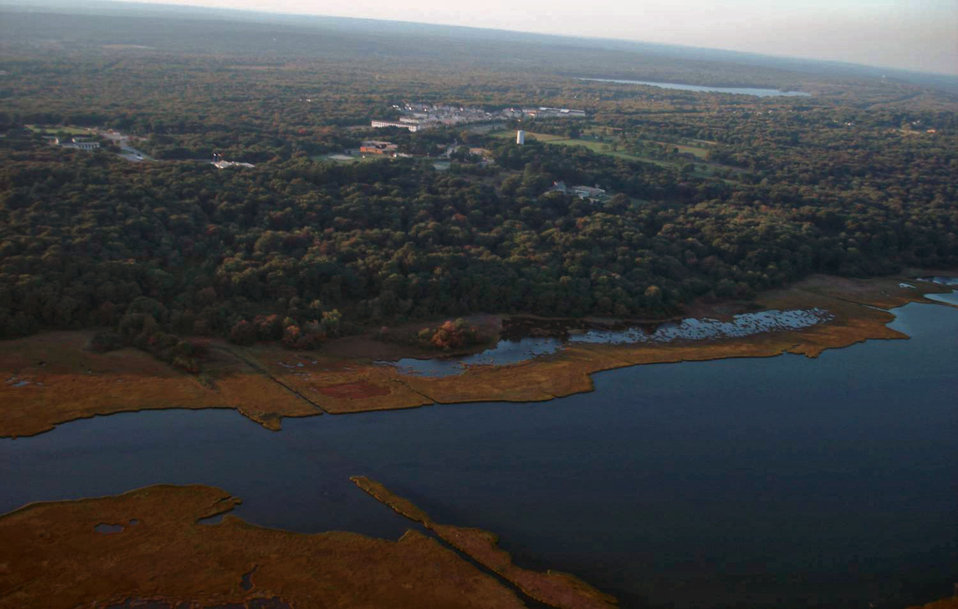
Aerial view of the refuge

John H. Chafee National Wildlife Refuge in Charlestown, RI.